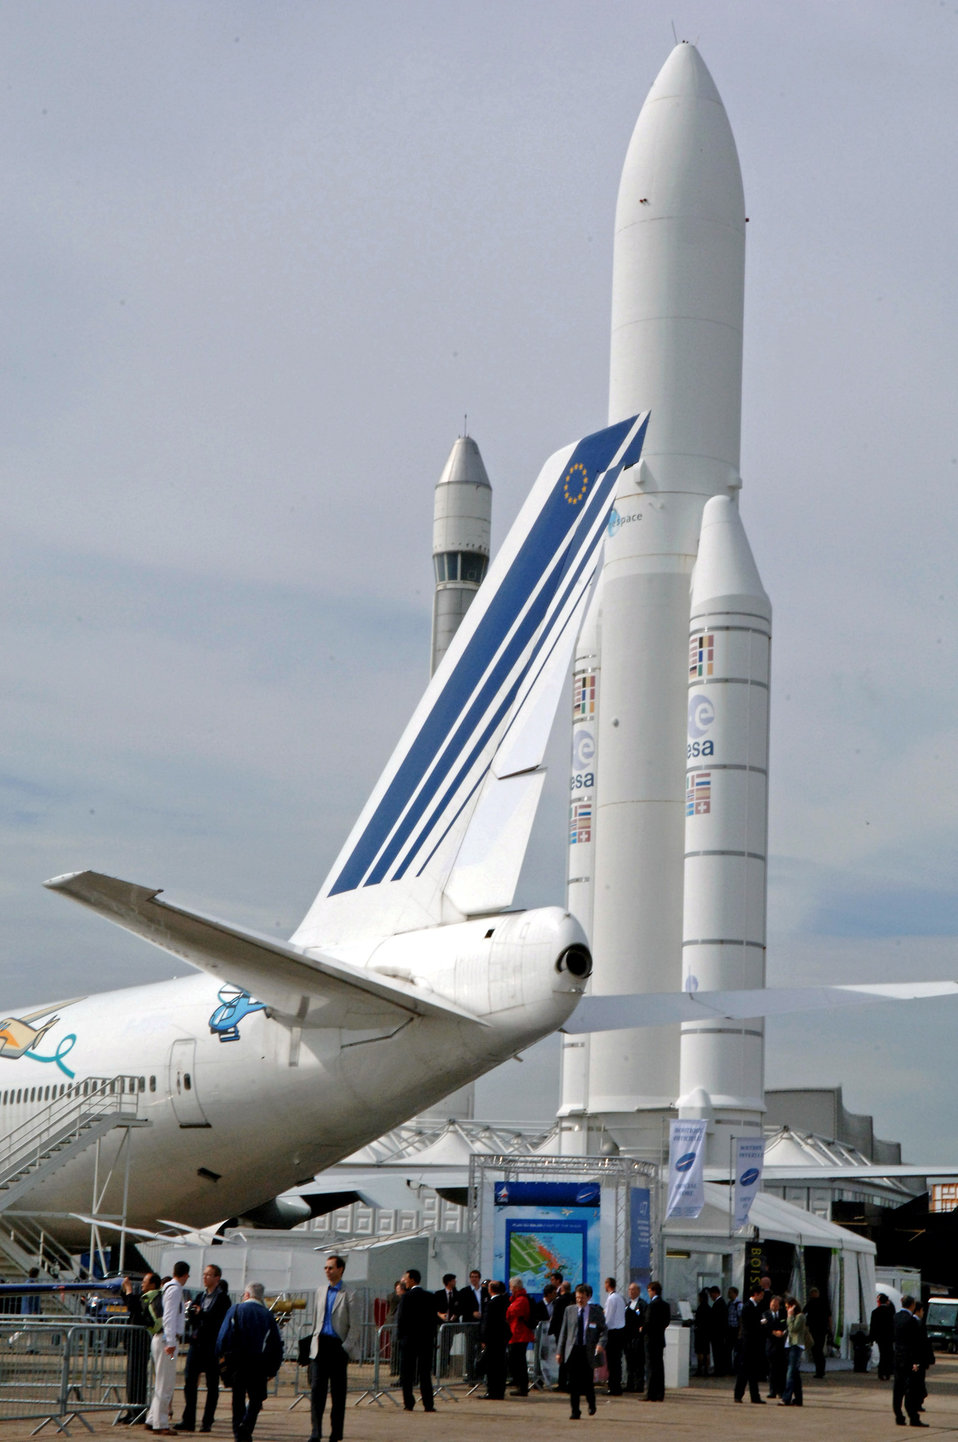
Air Force supports International Paris Air Show

More than 140 different aircraft from multiple counties makes the 47th International Paris Air Show a unique display of aircraft June 18 at the Le Bourget Airport, France. This year's air show, boasting more than 2,000 exhibits from 42 countries, opened to trade visitors June 18 and the general public can visit from June 22-24.